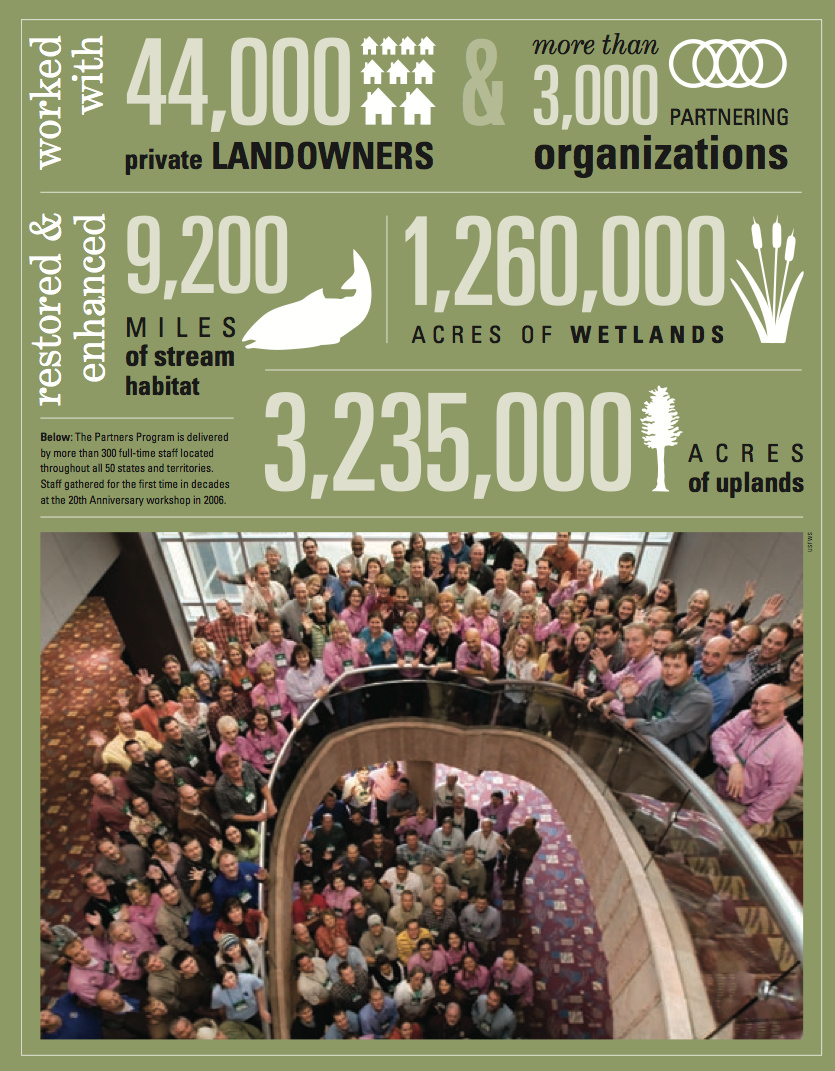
Partners for Fish & Wildlife 25th Anniversary Accomplishments